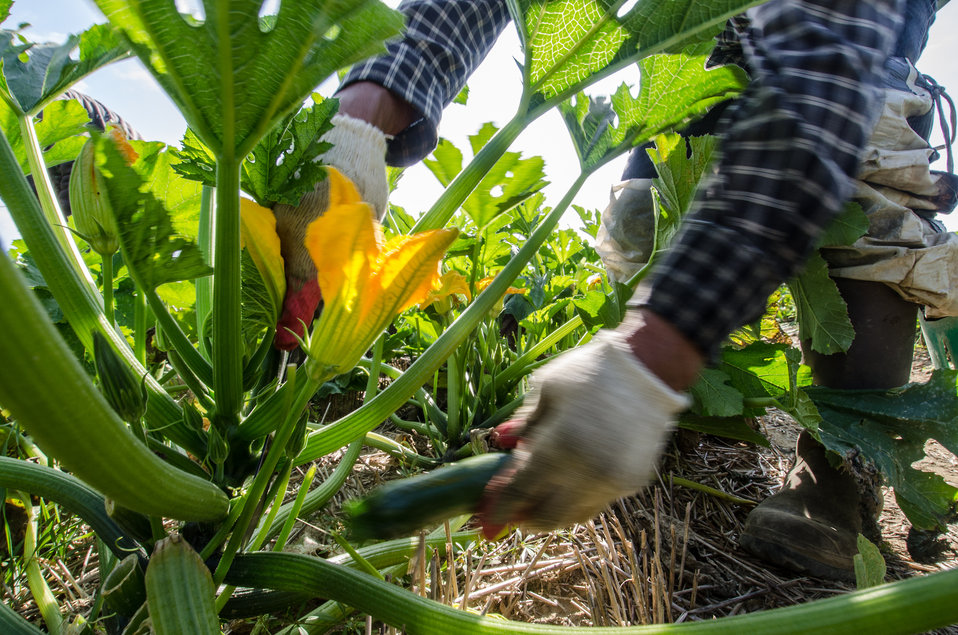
Migrant workers harvest green zucchini squash from rows of plants at Kirby Farms in Mechanicsville, VA on Friday, Sep. 20, 2013. The squash is then transferred to the processing crew for washing and packaging for shipment to wholesalers. Kirby Farms a third-generation family farm that covers 500 acres and generates produce and grains on a year-around operation.